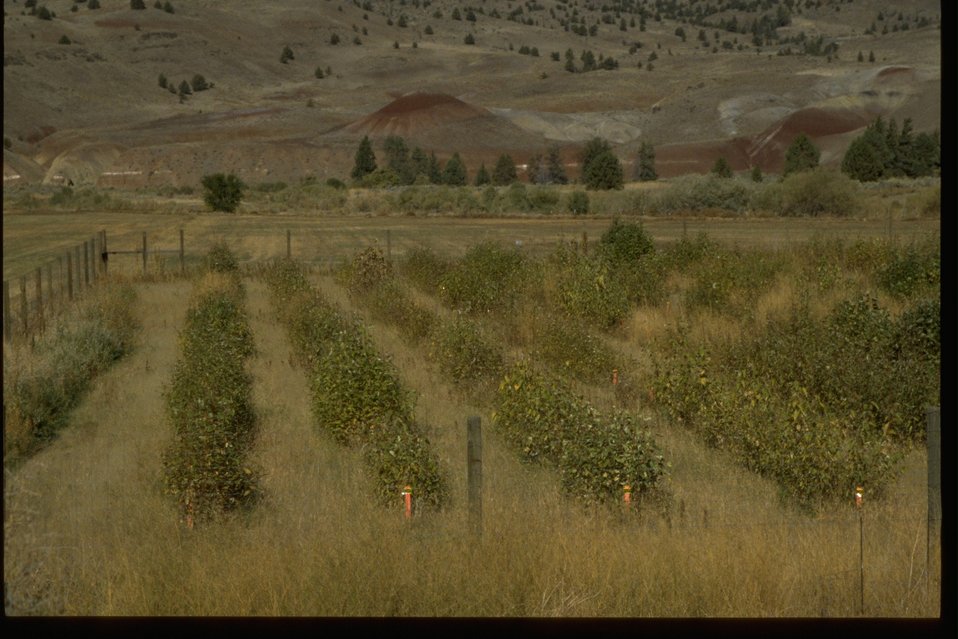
Bridge Creek Cottonwood orchard.